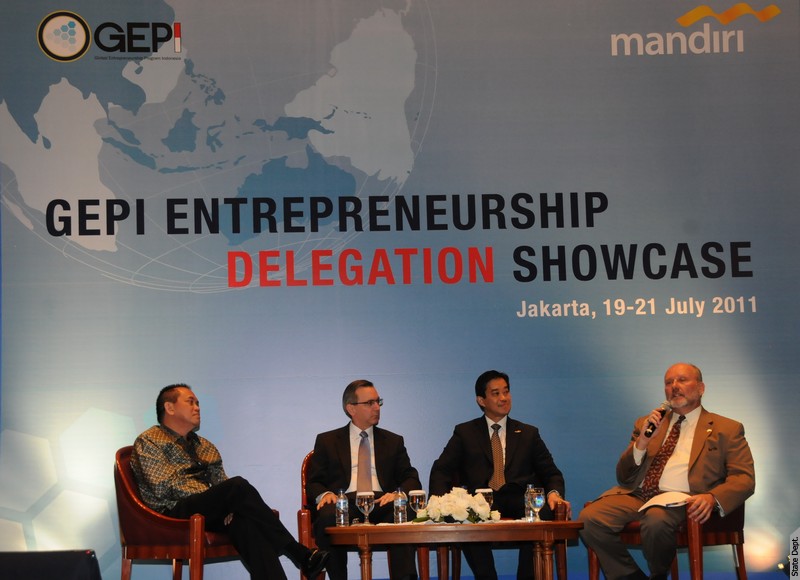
The Global Entrepreneurship Program Indonesia and U.S. Embassy Welcome Entrepreneurship Delegation

The Global Entrepreneurship Program Indonesia (GEPI) and the U.S. Embassy in Jakarta, Indonesia, welcome an Entrepreneurship Delegation of 12 leading American entrepreneurs, innovators and investors visiting Indonesia, July 19, 2011.